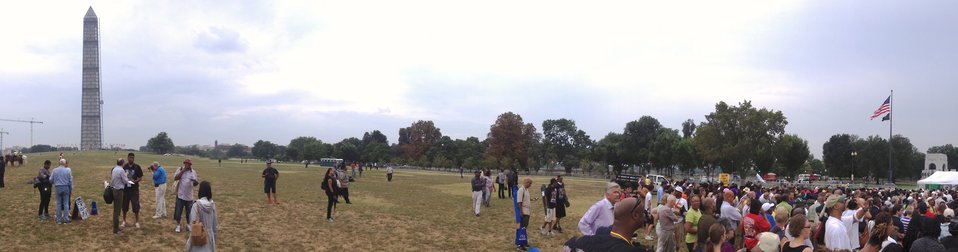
Marchers gather at the edge of the Washington Memorial grounds to process through the security entrance at the World War II Memorial, and on to the Reflecting Pool, and the Lincoln Memorial for the March on Washington, D.C., on Wed., Aug. 28, 2013.